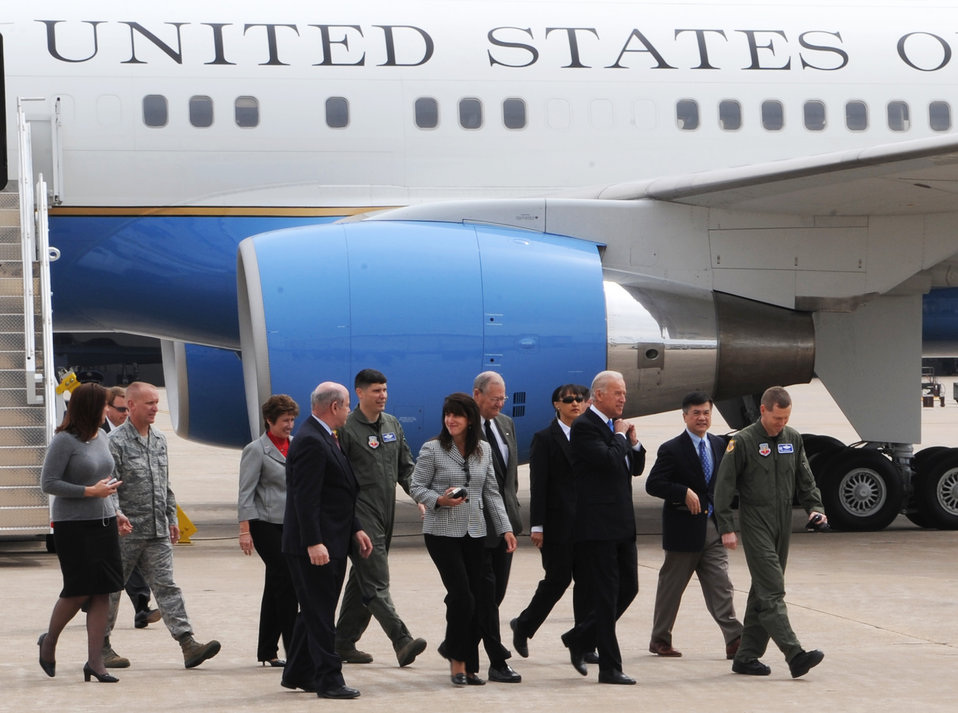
Vice president visits Whiteman

Vice President Joe Biden walks from Air Force Two after landing at Whiteman Air Force Base, Mo., April 16. He is escorted by Col. Robert Wheeler, 509th Bomb Wing commander, and Col. John Robinson, 509th BW vice commander. He was visiting the base to show the administration’s support for the troops. Later, Mr. Biden visited Jefferson City and the University of Missouri-St. Louis to highlight progress of the Recovery Act.